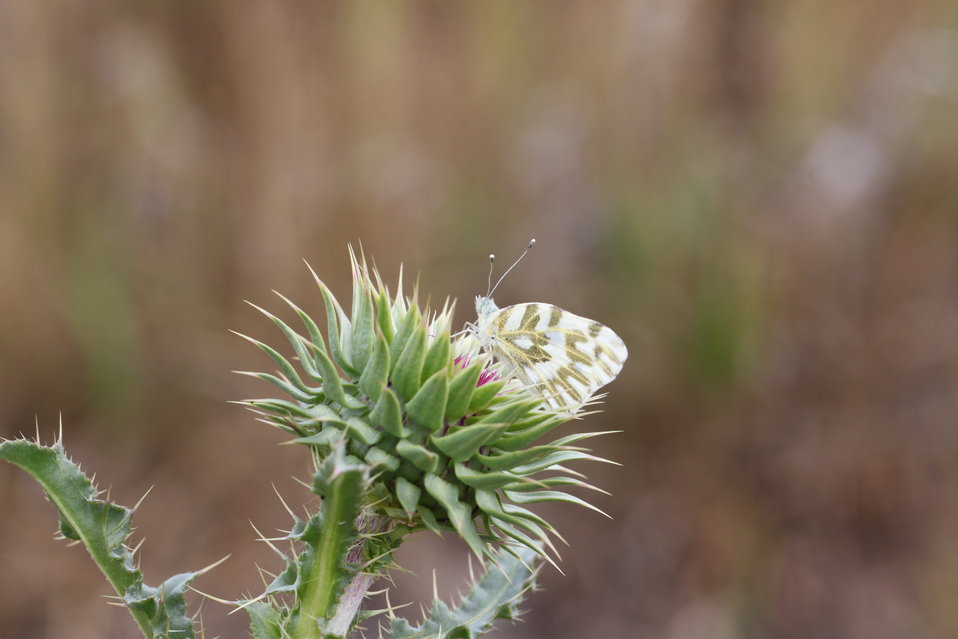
Becker's White

Pontia beckerii resting on bull thistle; this butterfly is usually found in arid habitats.